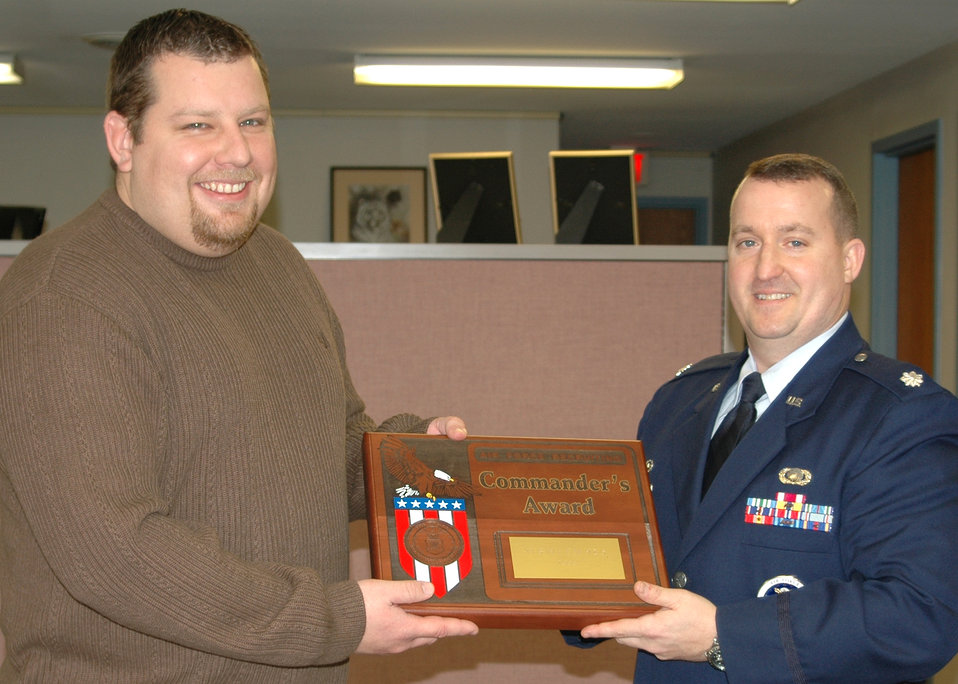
Wilford Hall medics depart for Iraq

Lt. Col. Rajul Vaishnani hugs his wife, Sonia, and son, Samir, as he prepares to deploy for four months to Iraq Jan. 9 in the Wilford Hall parking lot in San Antonio. Colonel Vaishnani also leaves behind Samir's twin sister, Sonya, and his newborn son, Kadin. Colonel Vaishnani is an anesthesiologist with the 59th Surgical Operations Squadron.